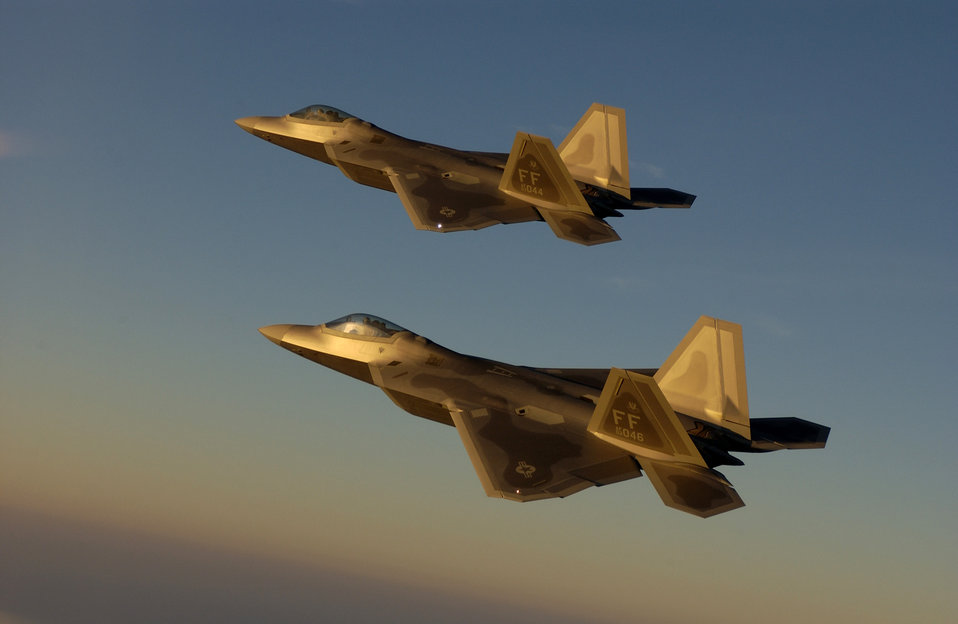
Raptors to bring air superiority to Northern Edge 2006

F-22A Raptors fly over Langley Air Force Base, Va., on Sept. 9, 2005.